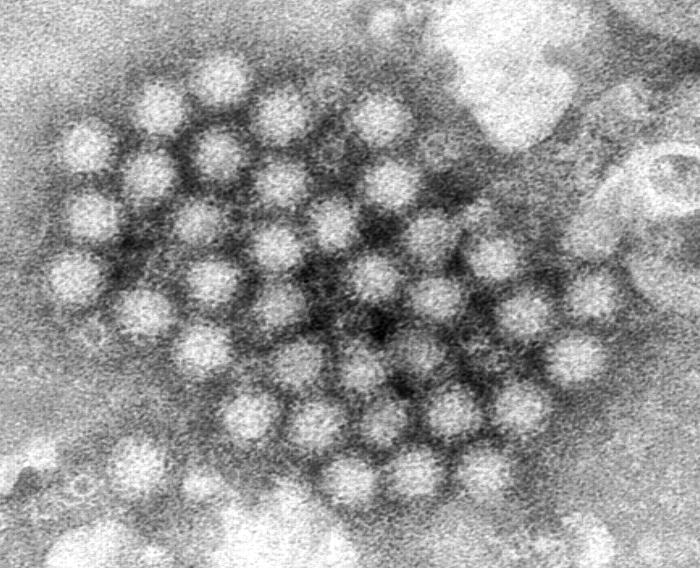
This transmission electron micrograph (TEM) revealed some of the ultrastructural morphology displayed by norovirus virions, or virus particles.How serious is norovirus disease?